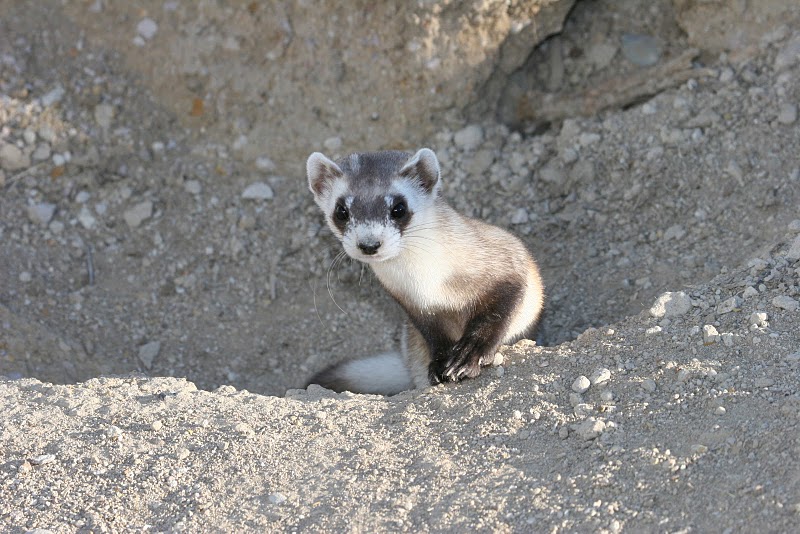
Black-footed Ferret